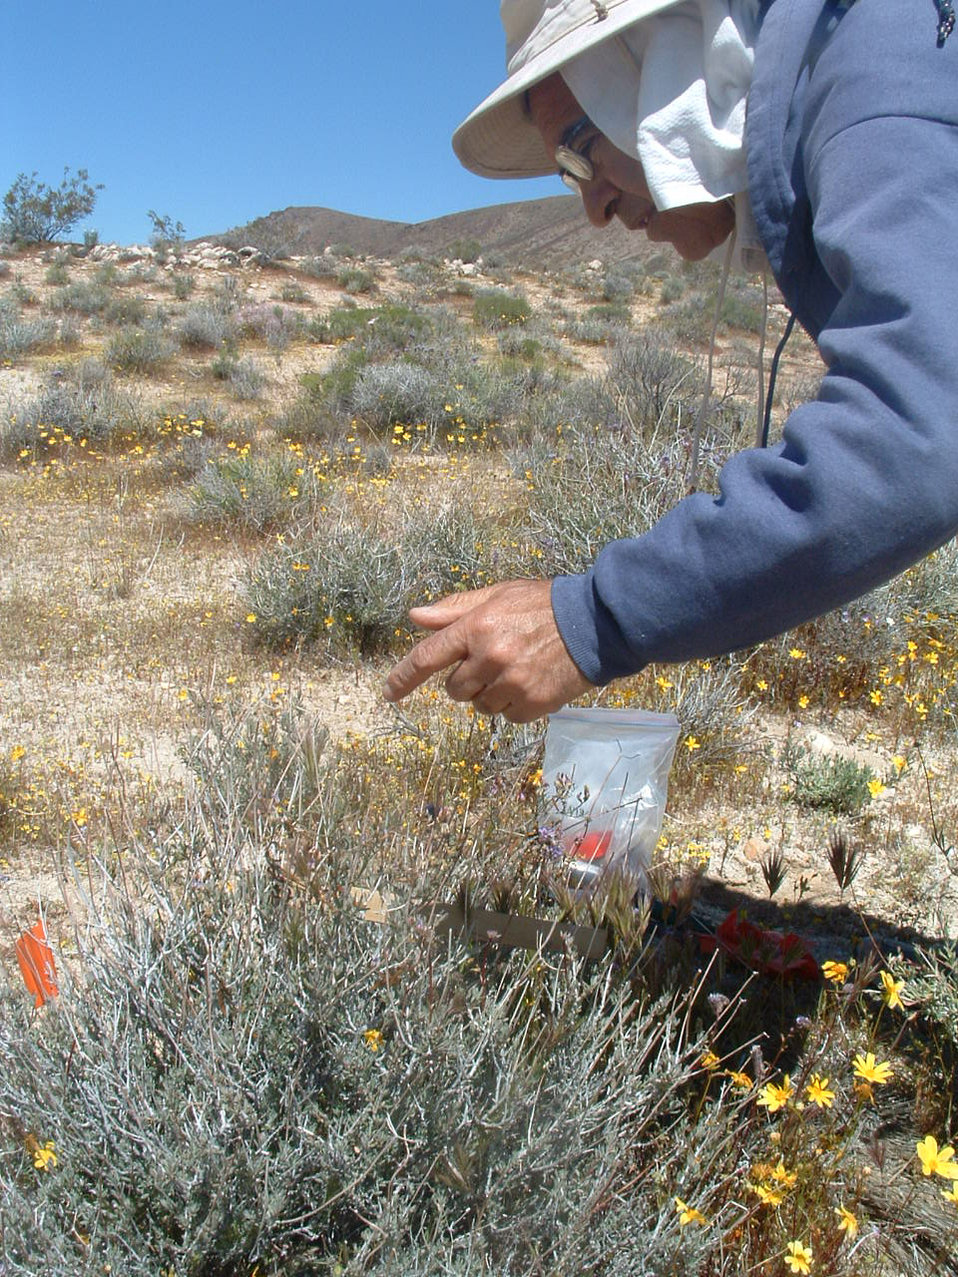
UCLA researcher with Lane Mountain Milk Vetch

UCLA researcher Rasoul Sharifi inspecting Lane Mountain milk-vetch.